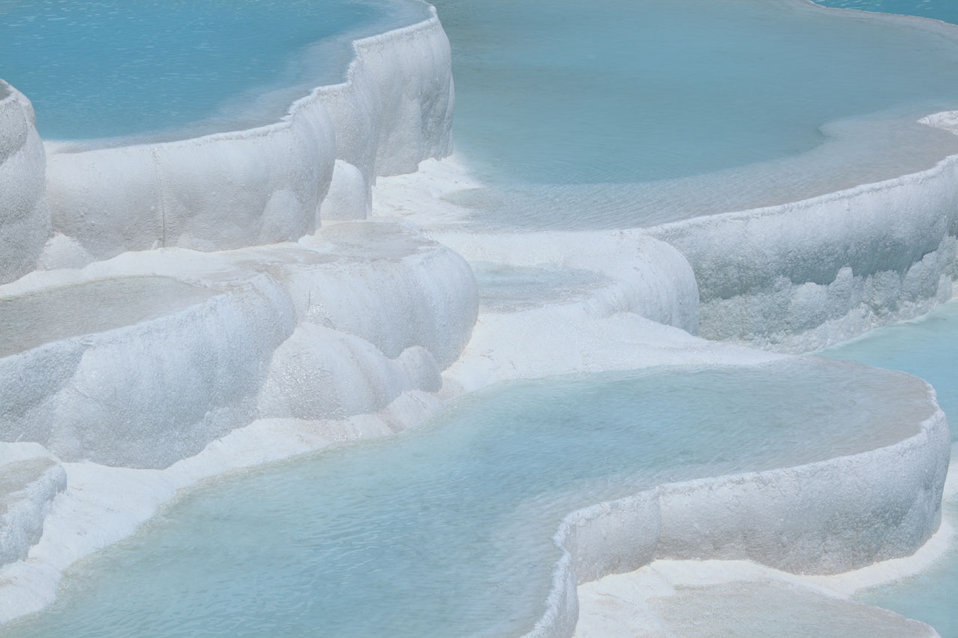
Pamukkale travertine in turkey.